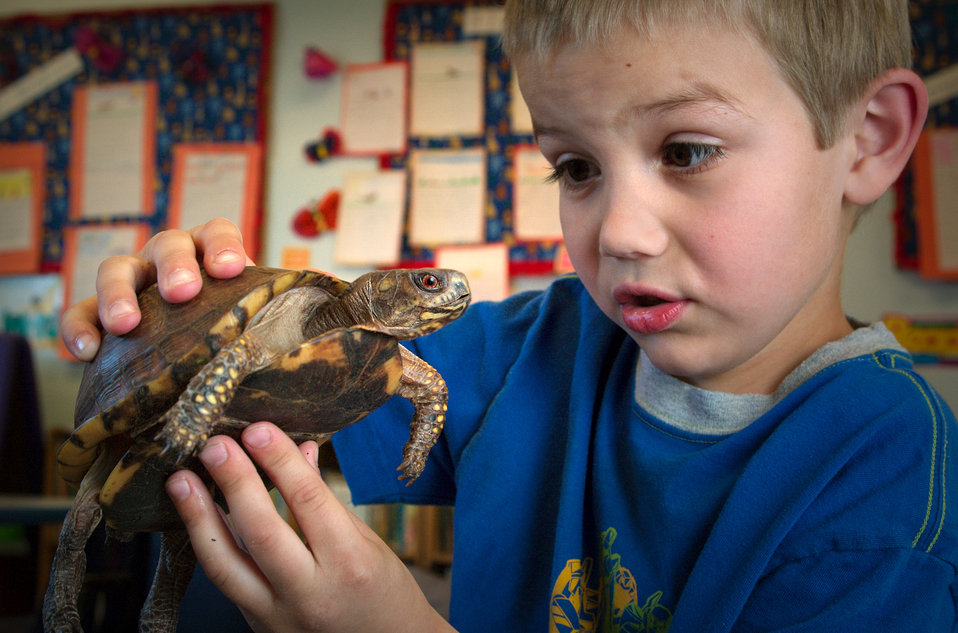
This 2005 photograph depicted a young boy holding a box turtle, portraying a look of wonderment mixed with curiosity, as the turtle looks on with almost a sense of the nonchalance. The importance of this image lies in the reality that turtles carry germs known as Salmonella, which are potentially dangerous to children. In fact, the sale of turtles less than 4 inches in length has been banned in the United States since 1975. The ban by the U.S. Food and Drug Administration (FDA) has prevented an estimated 100,000 cases of salmonellosis annually in children.There are a number of ways one can prohibit the spread of these bacteria, but of the utmost importance, when handling turtles and other potential Salmonella carriers, wash your hands thoroughly, and keep small children under the age of five, the elderly, and anyone who is immunocompromised away from direct contact with these creatures. For additional information on prevention and safety, please visit the link below!